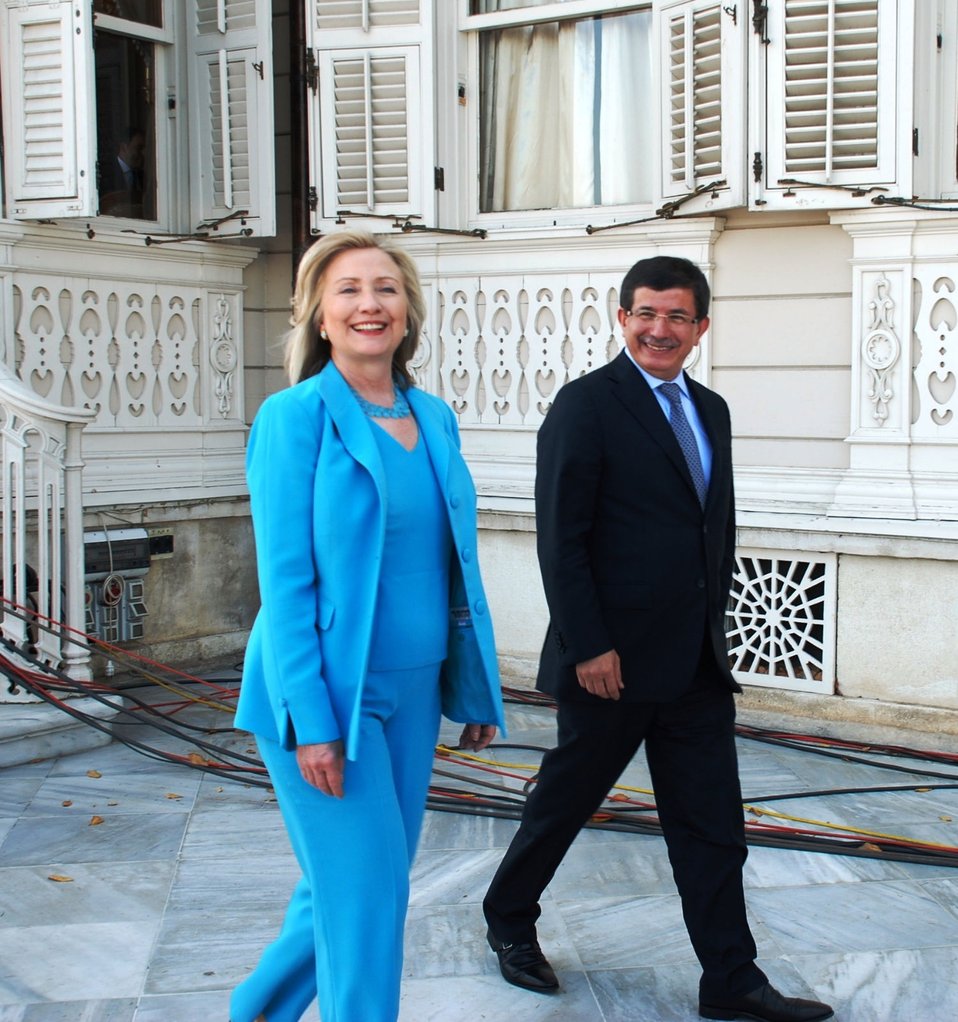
Secretary Clinton and Turkish Foreign Minister Davutoglu Walk

U.S. Secretary of State Hillary Rodham Clinton and Turkish Foreign MInister Ahmet Davutoğlu walk to a joint press conference after their bilateral meeting in Istanbul, Turkey, on July 16, 2011.